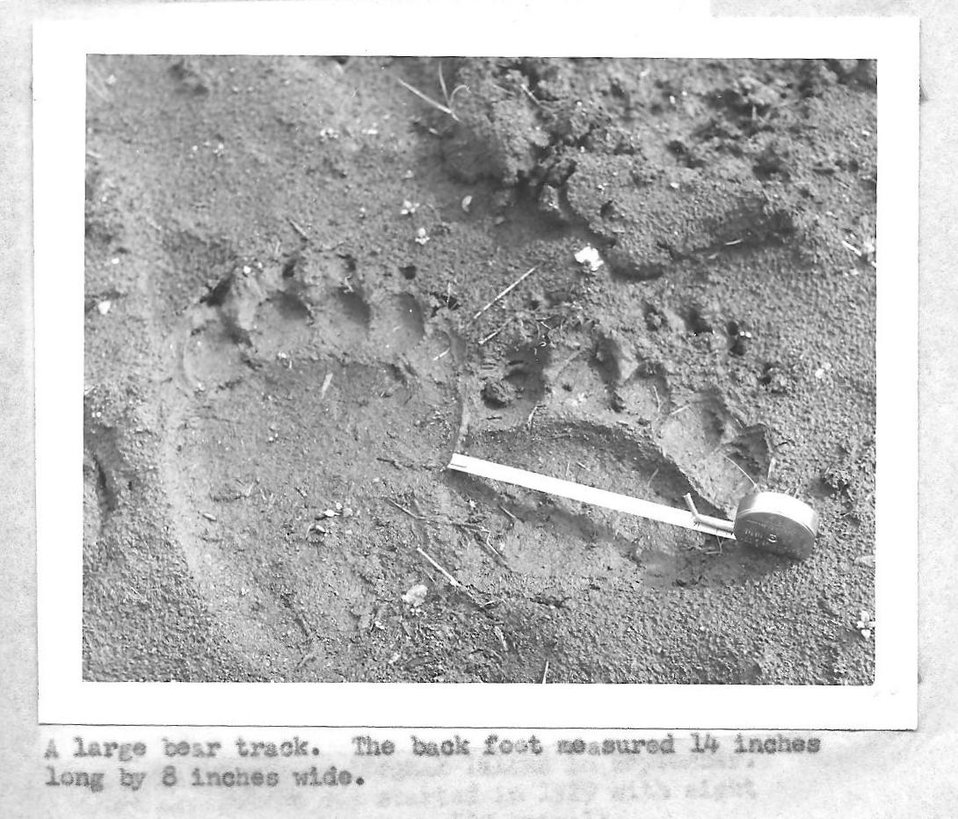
(1958) Bear Track

Credit: USFWS

Source and Contact: Kodiak National Wildlife Refuge